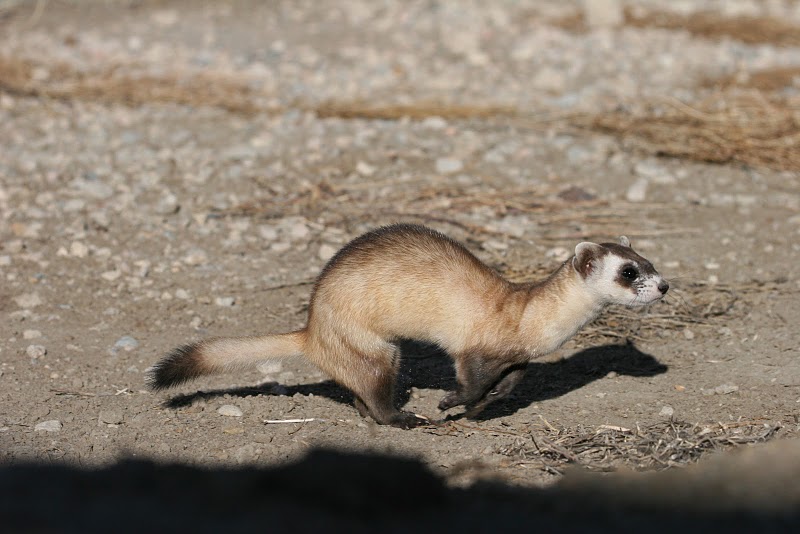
Running Black-footed Ferret